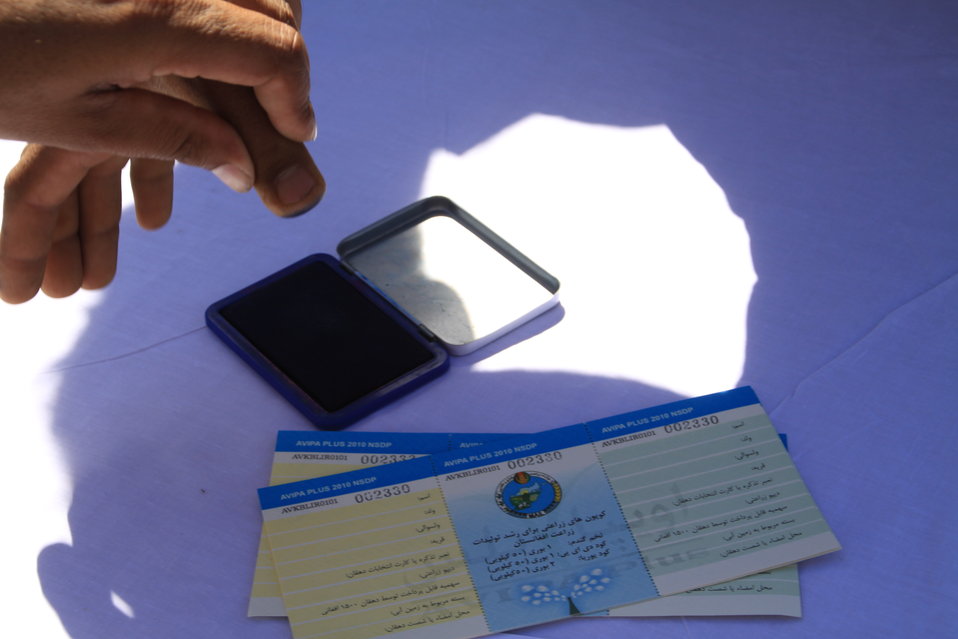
AVIPA Plus Wheat Seed Distribution 101005

US Ambassador Karl Eikenberry and USAID Acting Mission Director Kevin Brownawell joined the Minister of Agriculture, Irrigation and Livestock, H.E. Minister Mohammed Rahimi in signing a Memorandum of Understanding and distributing vouchers to area farmers for wheat and fertilizer.

US Ambassador Karl Eikenberry and USAID Acting Mission Director Kevin Brownawell joined the Minister of Agriculture, Irrigation and Livestock, H.E. Minister Mohammed Rahimi in signing a Memorandum of Understanding and distributing vouchers to area farmers for wheat and fertilizer.

US Ambassador Karl Eikenberry and USAID Acting Mission Director Kevin Brownawell joined the Minister of Agriculture, Irrigation and Livestock, H.E. Minister Mohammed Rahimi in signing a Memorandum of Understanding and distributing vouchers to area farmers for wheat and fertilizer.